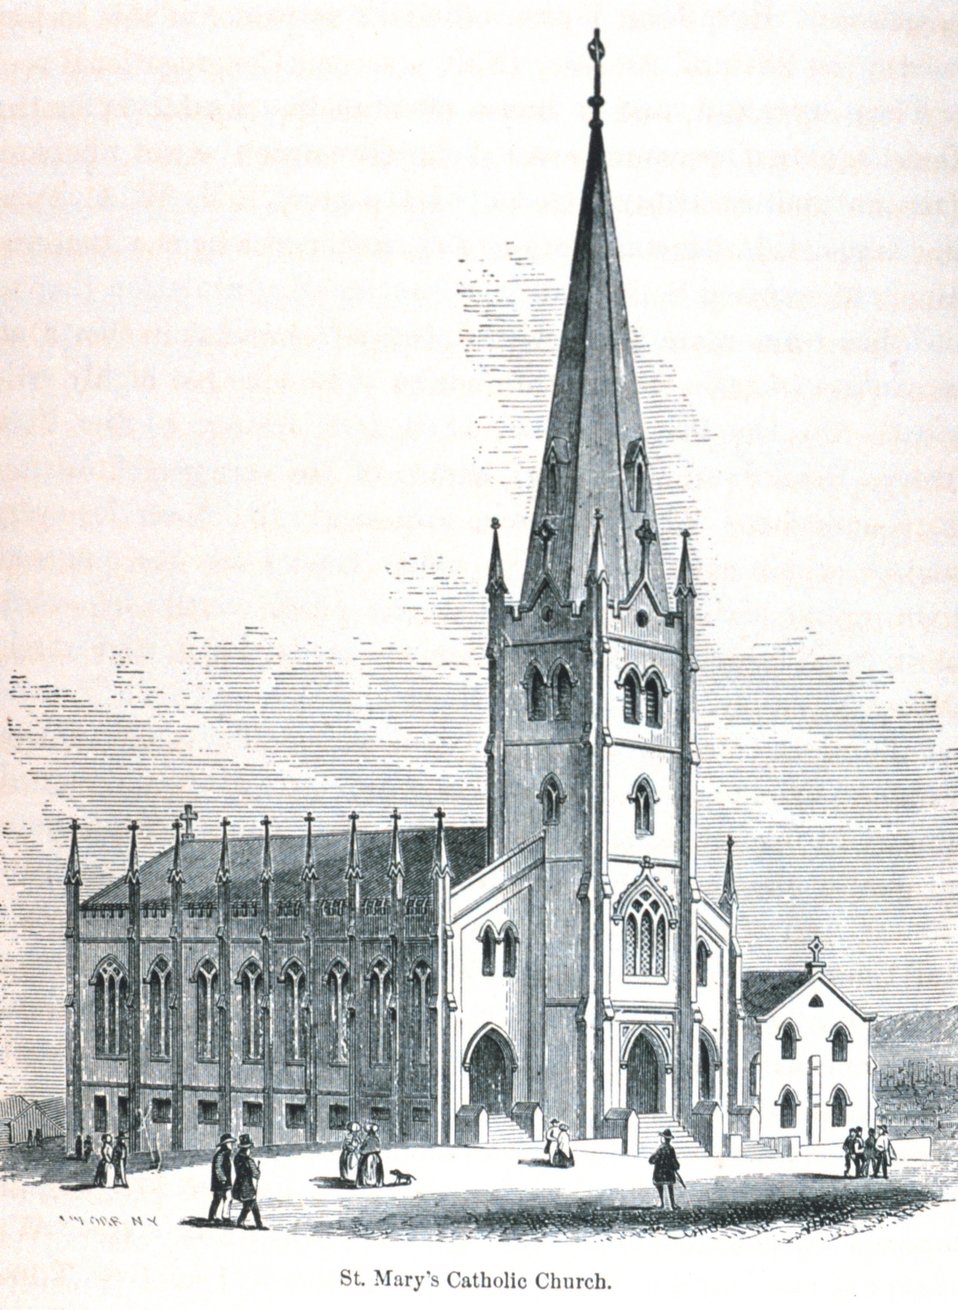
St. Mary's Catholic Church. In: 'The Annals of San Francisco'. Frank Soule, John Gihon, and James Nesbit. 1855. Page 698. D. Appleton & Company, New York. F869.S3.S7 1855.